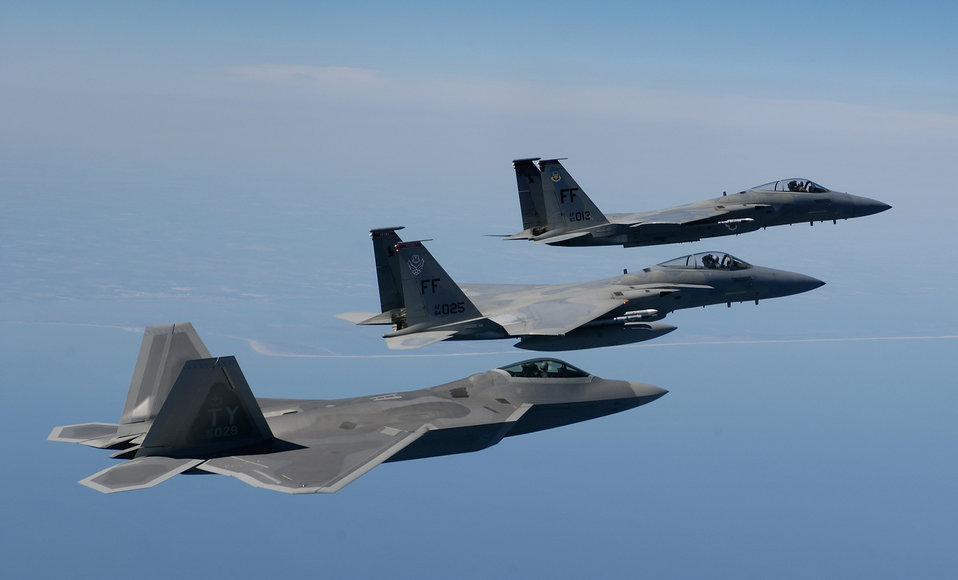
Birds of prey

OVER THE ATLANTIC OCEAN -- An F/A-22 Raptor, foreground, flies in formation with two F-15 Eagles en route to a training area off the coast of Virginia on April 5. The F/A-22 is assigned to the 27th Fighter Squadron and the F-15s are assigned to the 1st Fighter Wing, both at Langley Air Force Base, Va. The Raptor is on loan from Tyndall AFB, Fla.